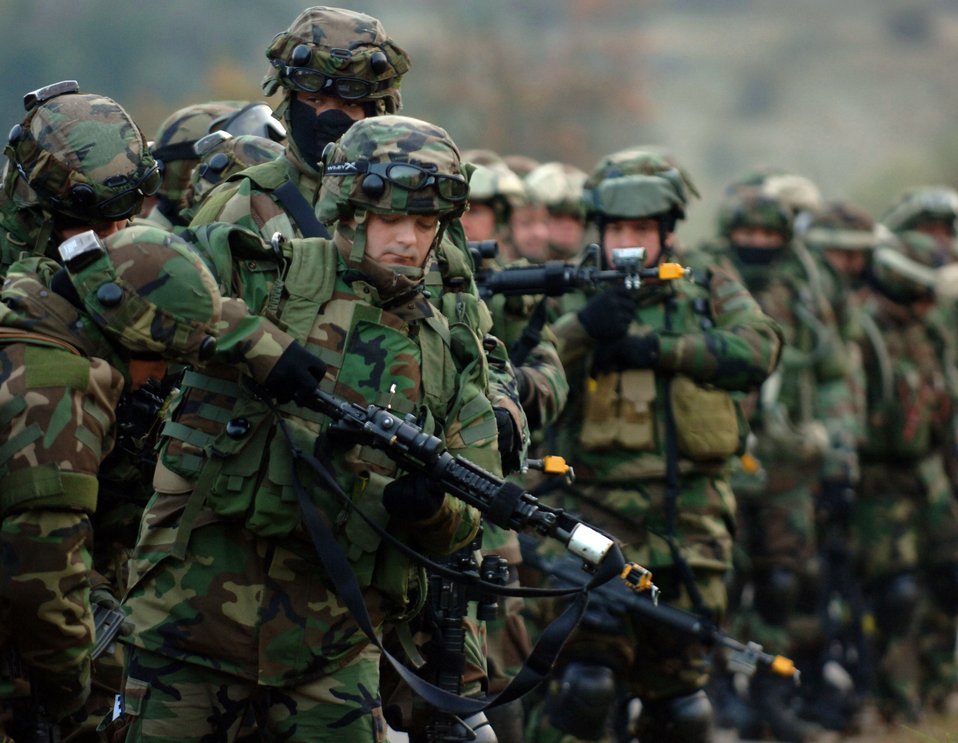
Creek Defender

Staff Sgt. Chris Medina charges his weapon before a mounted Humvee patrol Oct. 23 at Baumholder U.S. Army Garrison in southern Germany. Sergeant Medina, assigned to the 21st Security Forces Squadron at Peterson Air Force Base, Colo., is taking part in a two-week pre-deployment integrated base defense course known as Creek Defender.